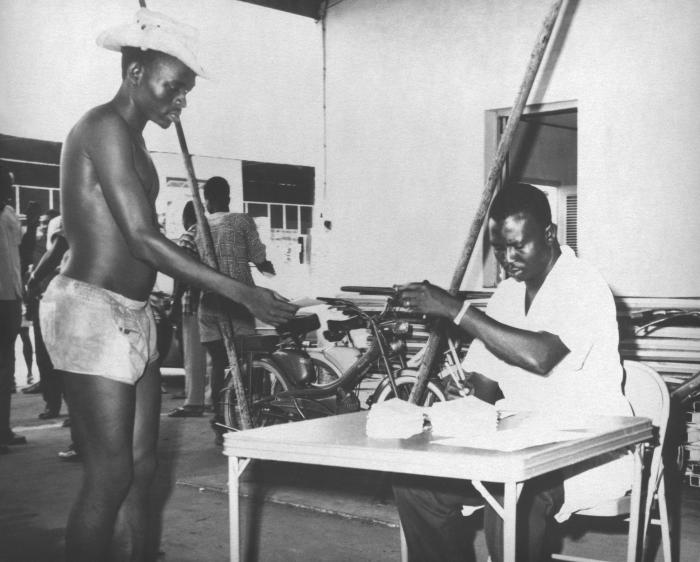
This man was about to be vaccinated against smallpox during Nigeria's 1968 Smallpox Eradication program.